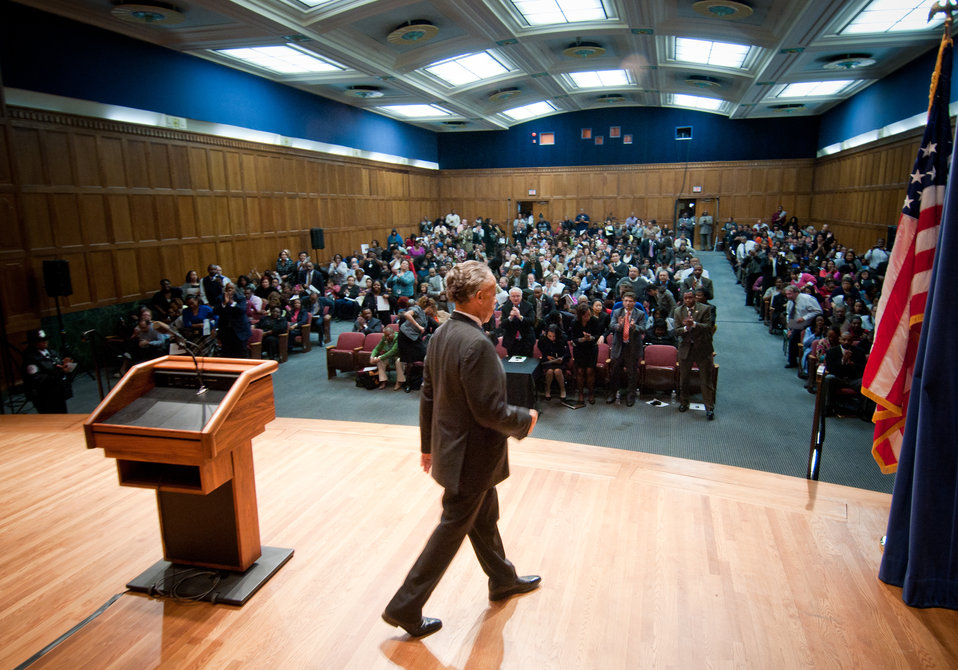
Reverend Al Sharpton, Jr. departs from the podium to a standing ovation after his keynote address at the Department of Agriculture’s African American History Month Program, on Monday, February 28, 2011 in Washington, D.C. Rev. Sharpton’s topic was “Civil Rights in the Age of Obama.”